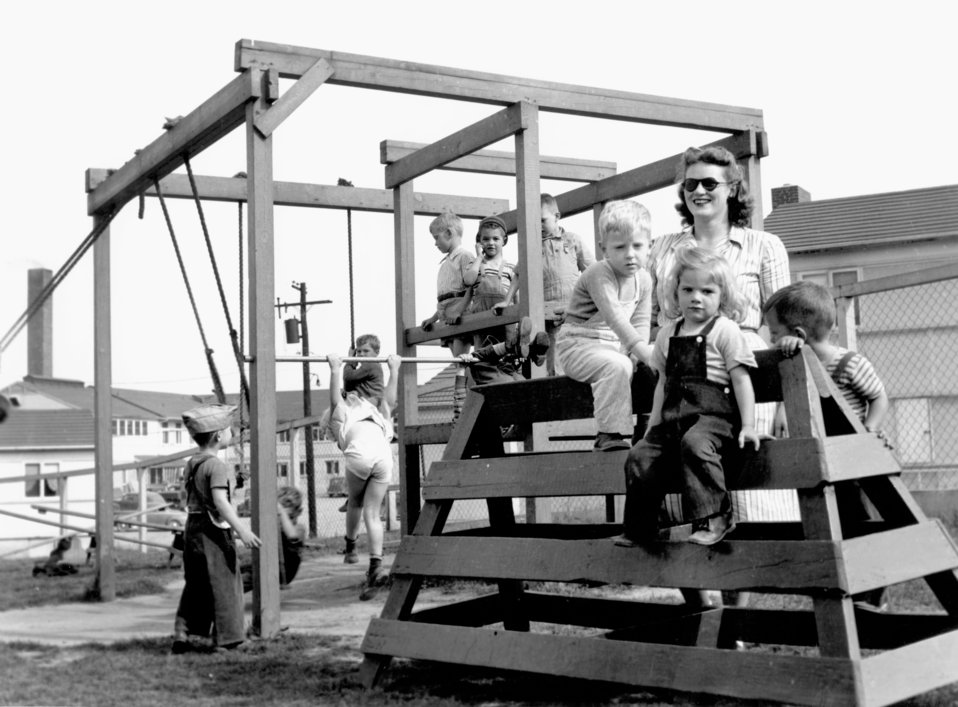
Nesper Road Nursery School Oak Ridge 1945

Pro-472-3 DOE photo Ed Westcott 4-27-1945 Oak Ridge Tennessee